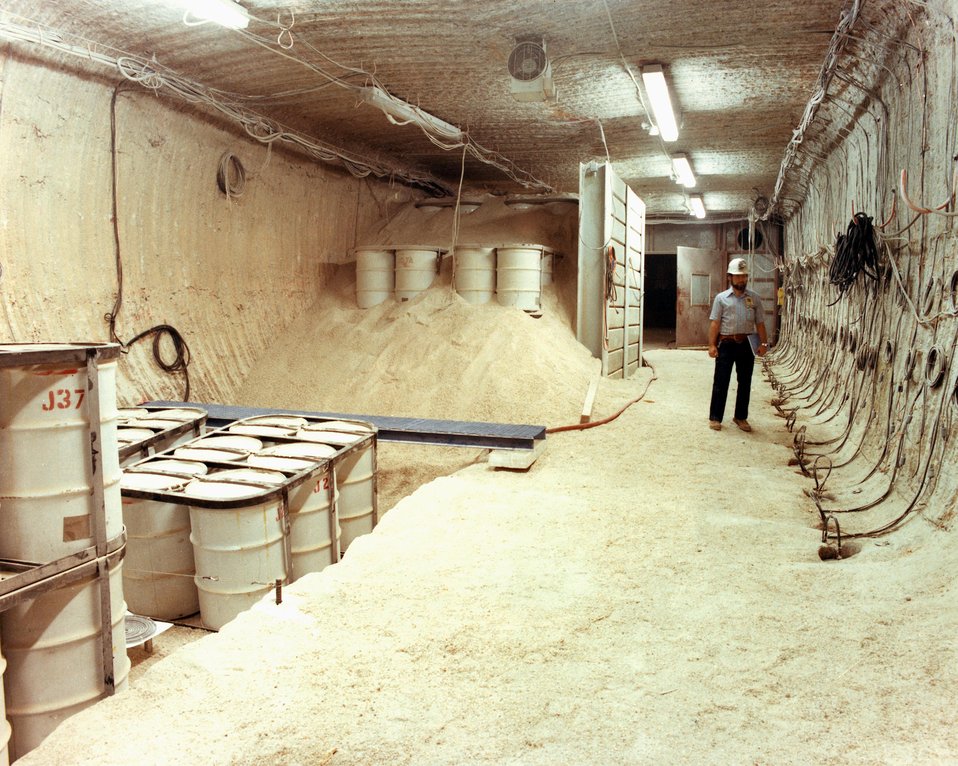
ROOM J SHOWING TRU CONTAINER TECHNOLOGY TEST ON THE LEFT.

THE WASTE ISOLATION PILOT PLANT IS A DOE RESEARCH AND DEVELOPMENT FACILITY FOR DEMONSTRATING THE SAFE DISPOSAL OF TRANSURANIC RADIOACTIVE WASTES. TEST SHAFTS HAVE BEEN DRILLED TO A DEPTH OF 2,100 FEET. THE SHAFTS, ONE 6 FEET IN DIAMETER AND THE OTHER 12 FEET IN DIAMETER, PROVIDE AN ENTRY PASSAGE AND VENTILATION TO THE UNDERGROUND SALT ROCK FORMATION THAT IS BEING TESTED TO DETERMINE ITS SUITABILITY FOR RADIOACTIVE WASTE STORAGE.